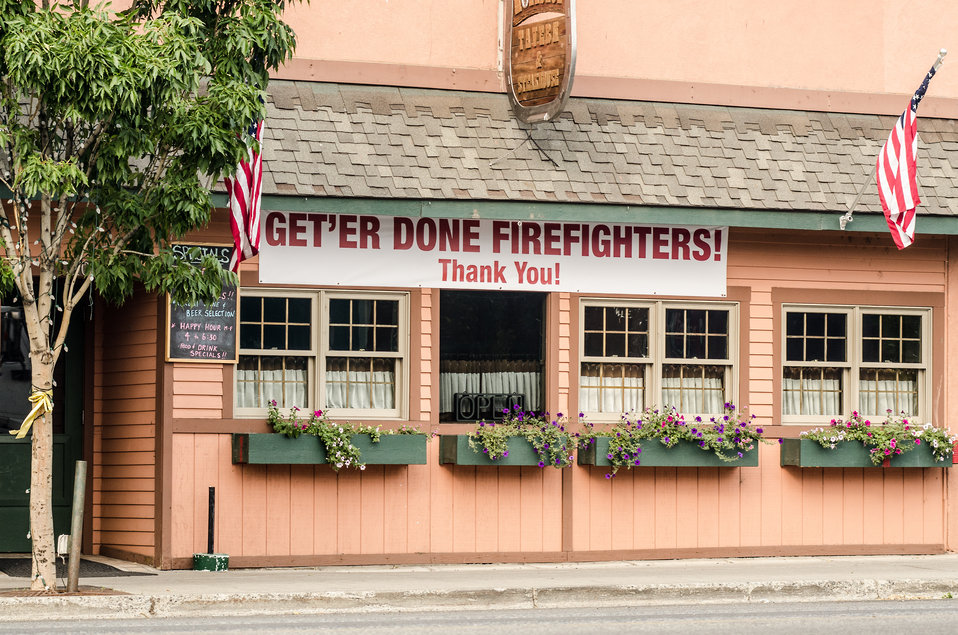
Signs of support posted by residents and businesses are seen throughout the Beaver Creek Fire Area, in Hailey (seen here), Sawtooth National Forest and Bureau of Land Management lands, on Wednesday, Aug 21, 2013.